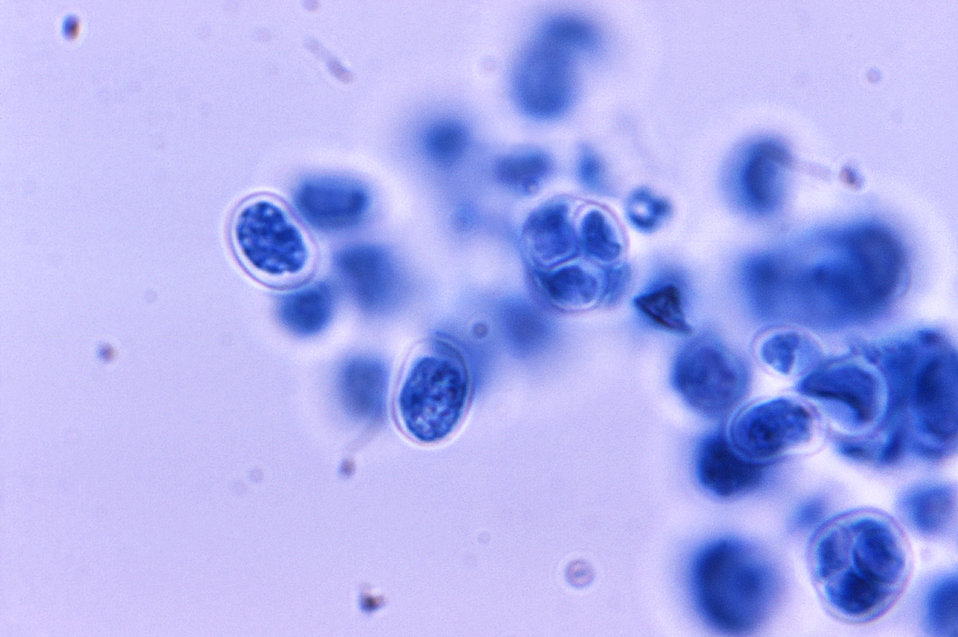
At a magnification of 1125X, this photomicrograph revealed the presence of a number of Prototheca moriformis algal organisms.